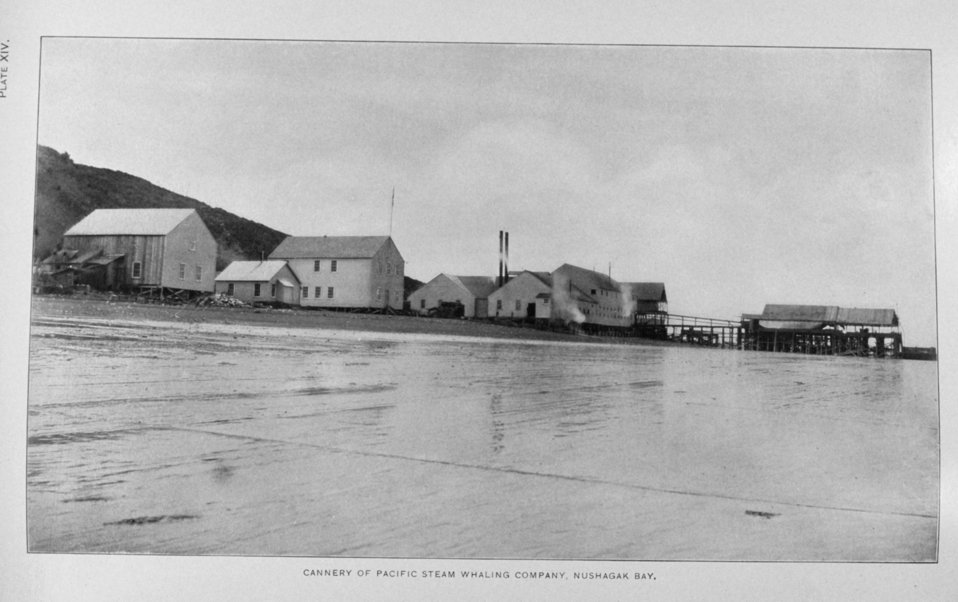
Cannery of Pacific Steam Whaling Company, Nushagak Bay. In: 'Alaska Salmon Investigations,' by Jefferson F. Moser, p. 202, 1902. Washington , Government Printing Office. Library Call No. G945 M98.